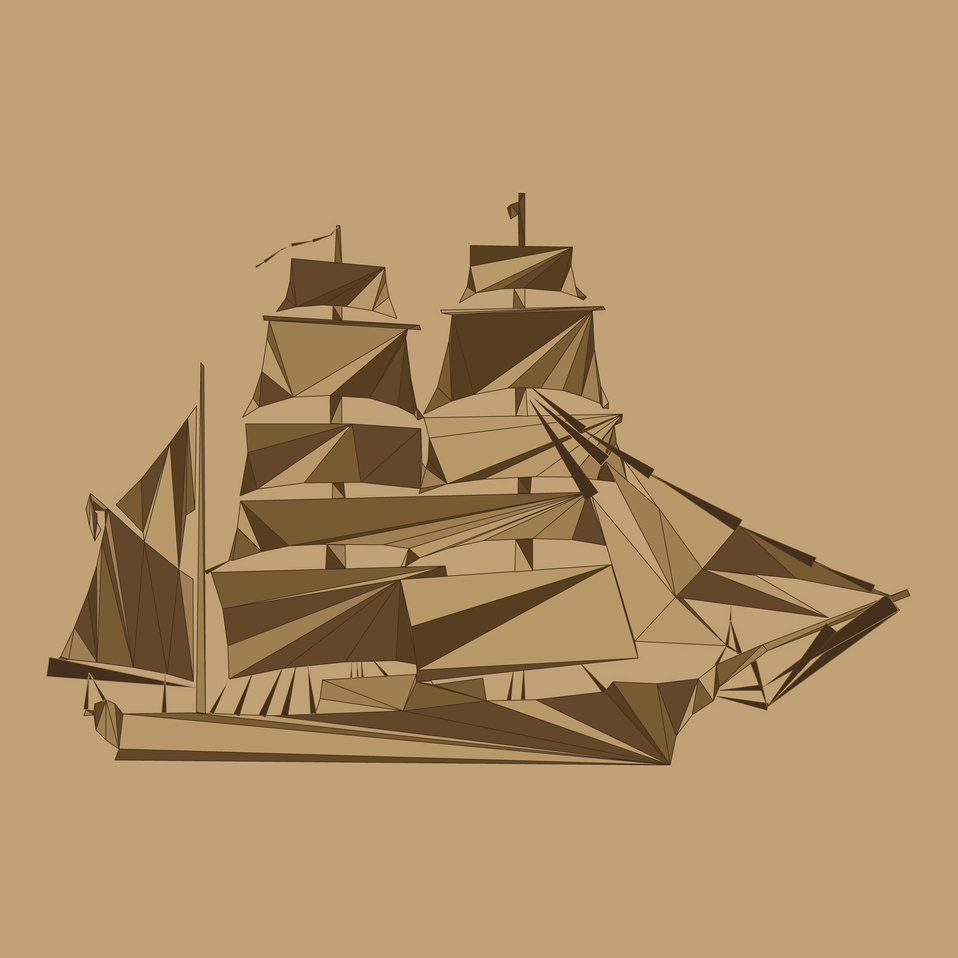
Sailboat computerized image.